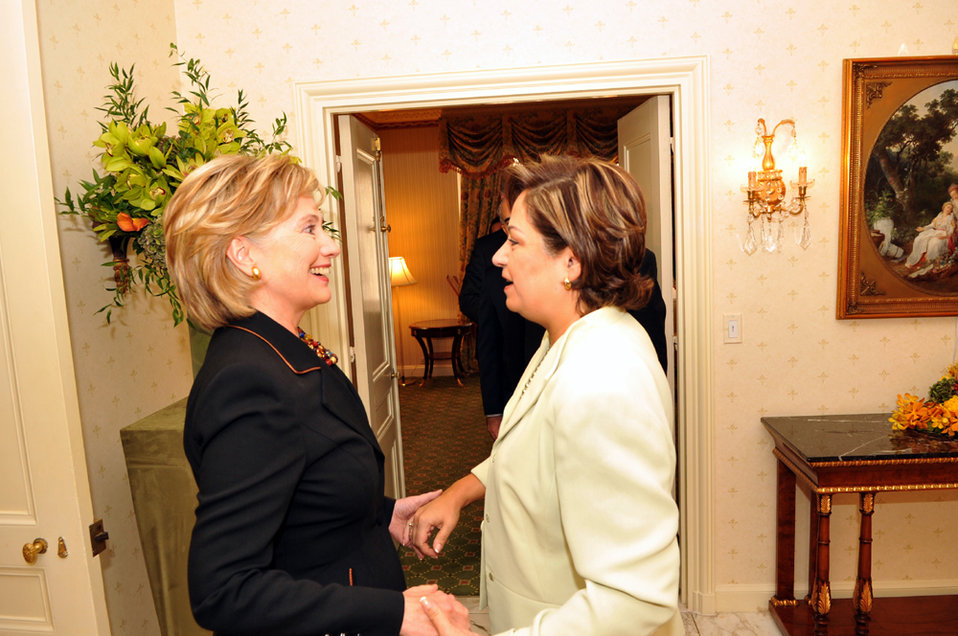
UNGA 2009: Secretary Clinton Meets With Mexican Foreign Secretary

U.S. Secretary of State Hillary Rodham Clinton meets with Mexican Foreign Secretary Patricia Espinosa at the Waldorf Astoria hotel in New York City, New York September 26, 2009.